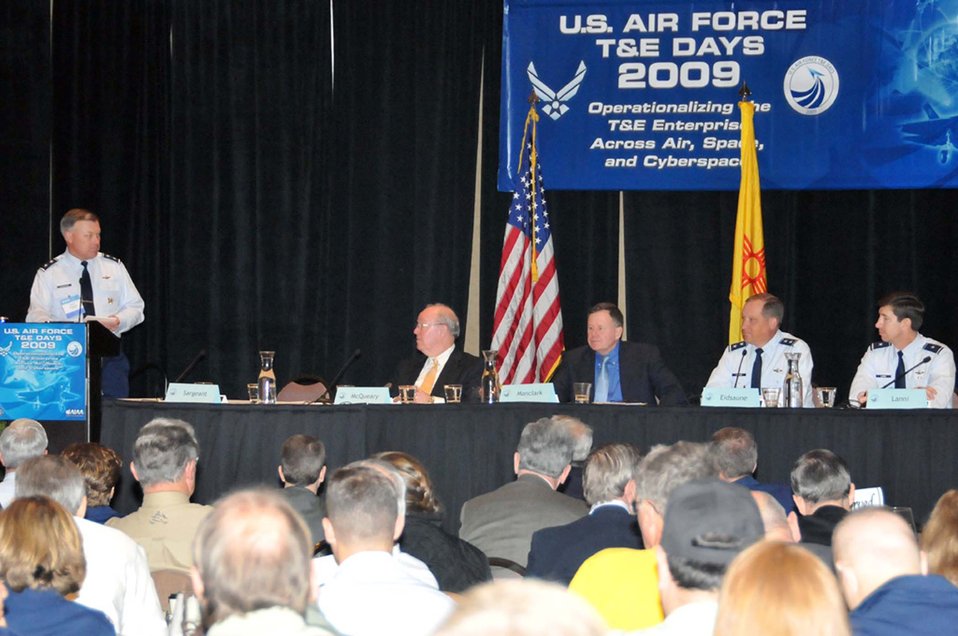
Air Force conference focuses on test and evaluation

(From left) Maj. Gen. Stephen T. Sargeant, Air Force Operational Test and Evaluation Center commander, introduces panel members during the 2009 U.S. Air Force Test and Evaluation Days Conference in Albuquerque, N.M., Feb. 10-12. Panel members included Dr. Charles McQueary, Director of Operational Test and Evaluation; Mr. John Manclark, Director of Air Force Test and Evaluation; Maj. Gen. David Eidsaune, Commander, Air Armament Center and Air Force Program Executive Officer, Weapons, Air Force Materiel Command; and Brig. Gen. Joseph Lanni, Director of Air, Space and Information Operations, Headquarters Air Force Materiel Command.